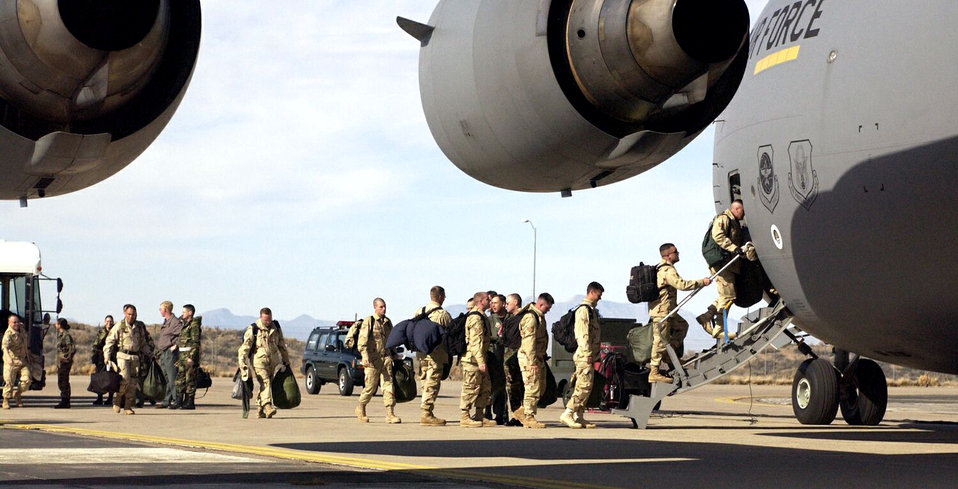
Loading up

OPERATION ENDURING FREEDOM -- More than 50 airmen from Holloman Air Force Base, N.M., board a C-17 Globemaster III leaving for a forward-deployed location supporting Operation Enduring Freedom. Using the Defend America Web site, nearly 4 million people have signed an online thank you note for deployed troops.